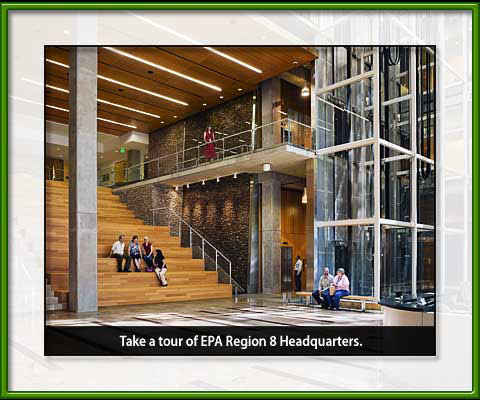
Region 8 Green Building Atrium and Tour

Groups can tour the Region 8 Green Office Building and learn more about the design features, green products, innovative technologies and business practices that make this building a model of sustainability. Tours generally take about 1 hour. Reservations are required for all tours. Tours are offered upon request from 9 a.m. to 4 p.m., Tuesday through Friday. The 1st and 2nd floors are open to the public; please feel free to visit our Library and Environmental Information Service Center on the 2nd floor.

To find out more about the Region 8 green building: www.epa.gov/region8/building/

To find out more about the Region 8 green building tour: www.epa.gov/region8/building/tours.html